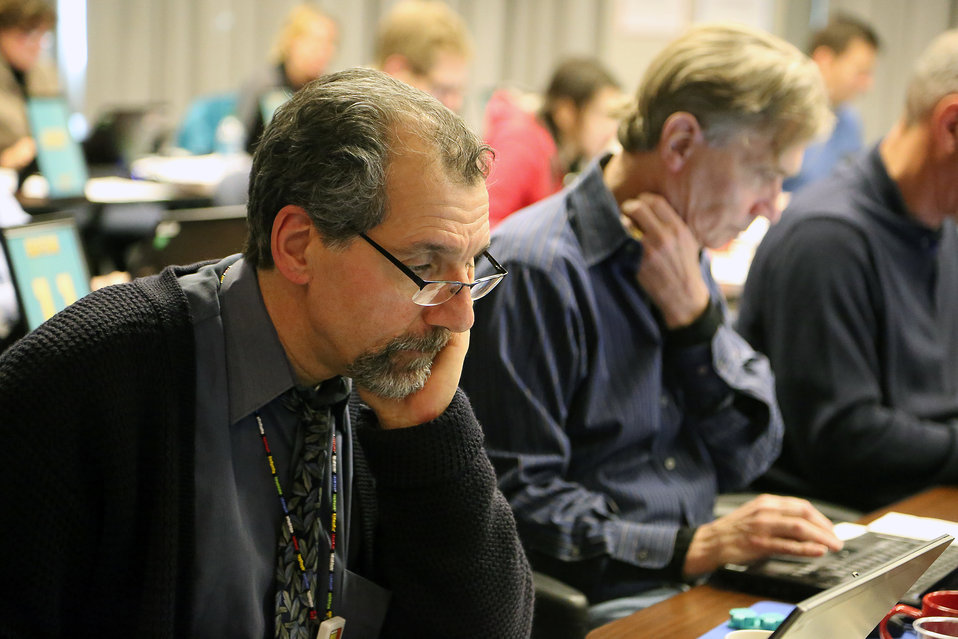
NIDA Scientists Chatted All Day with Teens

Chat Day Event held by the National Institute on Drug Abuse during its National Drug Facts Week Jan. 27-Feb. 2, 2014. Scientists from NIDA and other agencies answered questions about drugs from teens around the world on Jan. 29th in Rockville, Maryland.